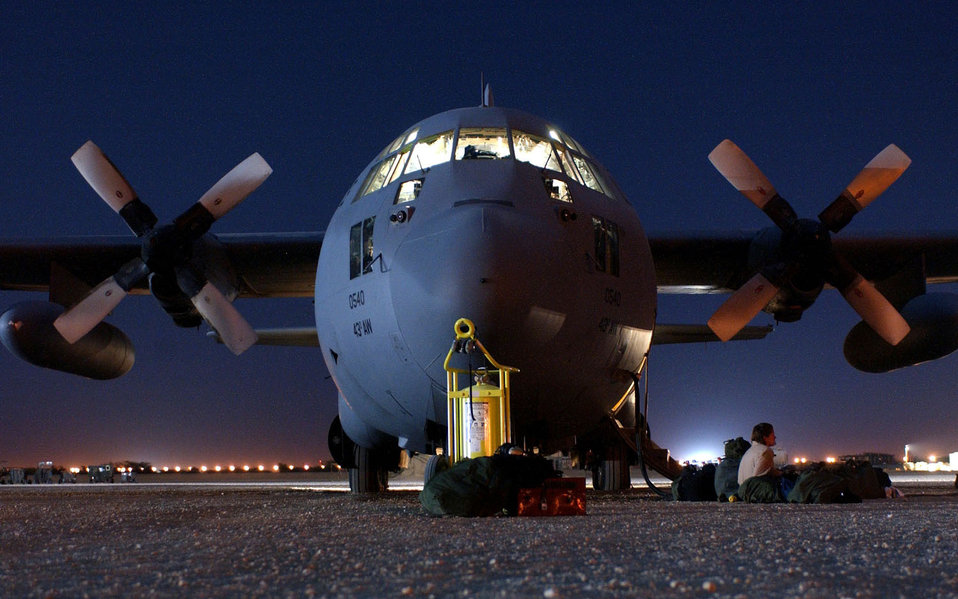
Air Force helps Army with airdrops

OPERATION ENDURING FREEDOM -- A C-130 Hercules, assigned to the 320th Air Expeditionary Wing at a forward-deployed location, awaits its next mission on the flightline. The aircraft was used to perform a heavy equipment airdrop into south central Afghanistan supporting Operation Enduring Freedom.